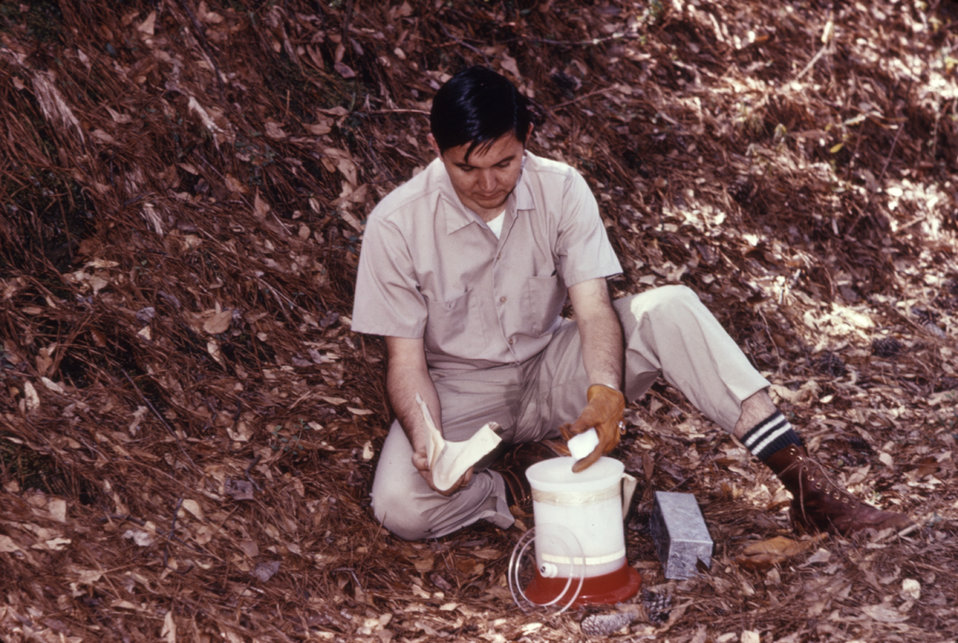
This dry ice set-up was used to anesthetize small mammals caught in the field during a 1974 arbovirus study.